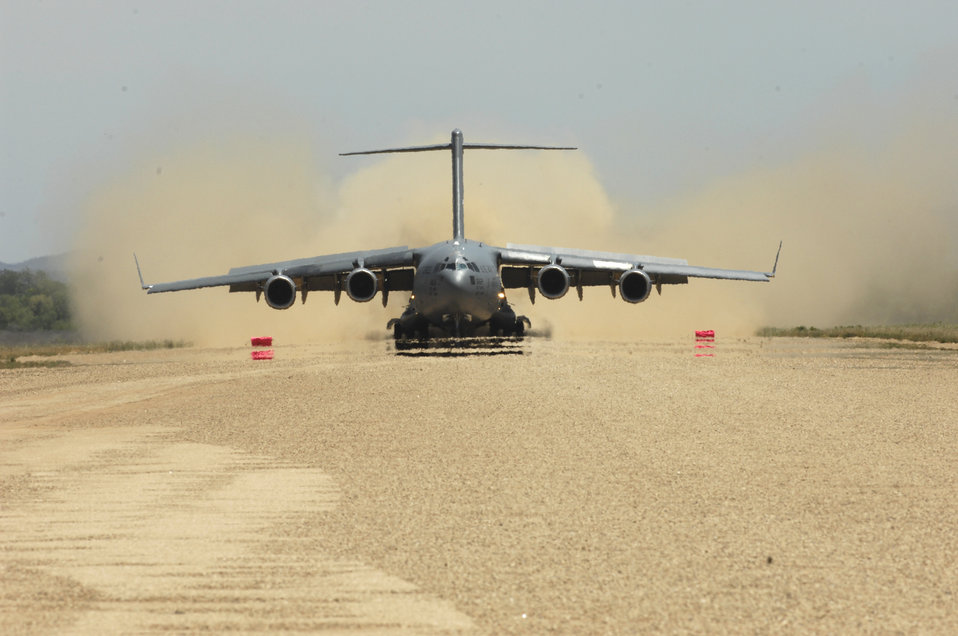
Perfect landing

A C-17 Globemaster III lands May 14, 2011, at Fort Hunter Liggett, Calif., during Global Medic 2011.